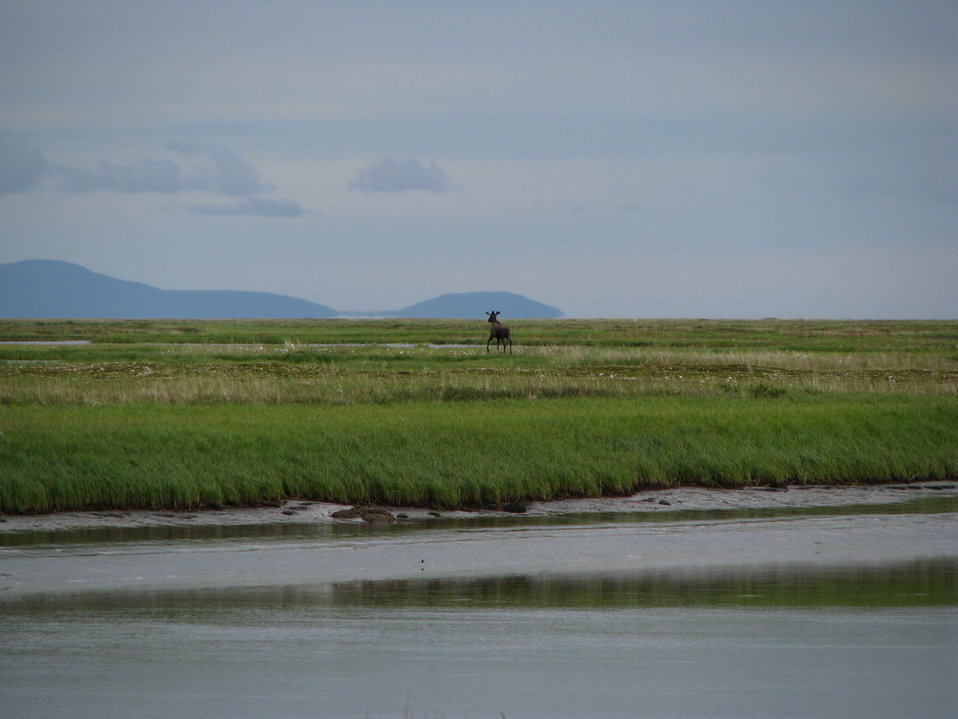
Moose sighting

USFWS Yukon Delta NWR
This moose was spotted walking along the river bank toward one of the refuge field camps.
Unfortunately, it was startled and decided to take a different route.